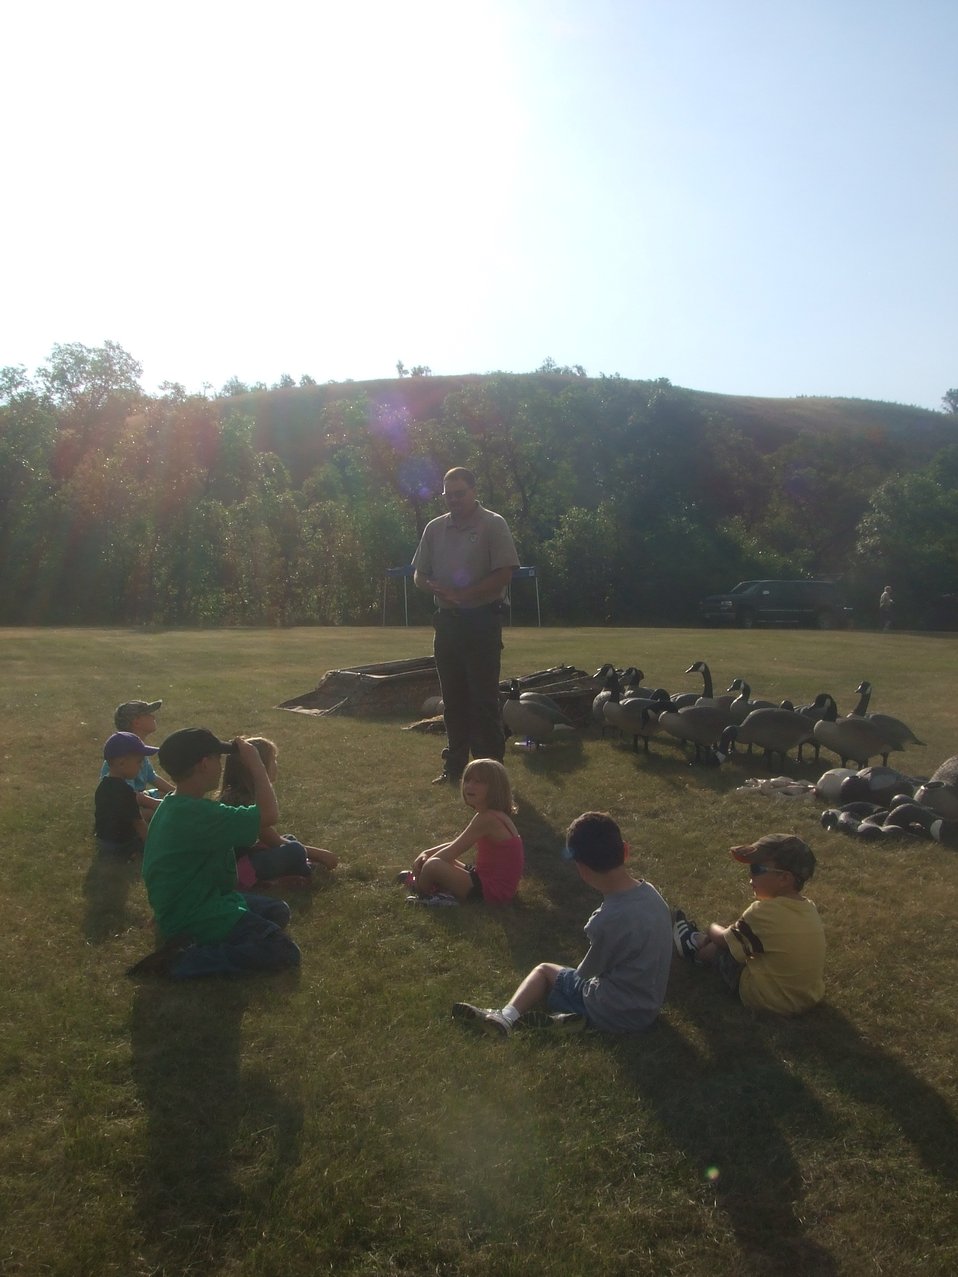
2011 Greenwing Day - Decoy Setup Session

Des Lacs National Wildlife Refuge, Tasker's Coulee

Refuge Manager, Chad Zorn, discussed with youth about how to set up those cool looking decoys out in the field for a hunt.